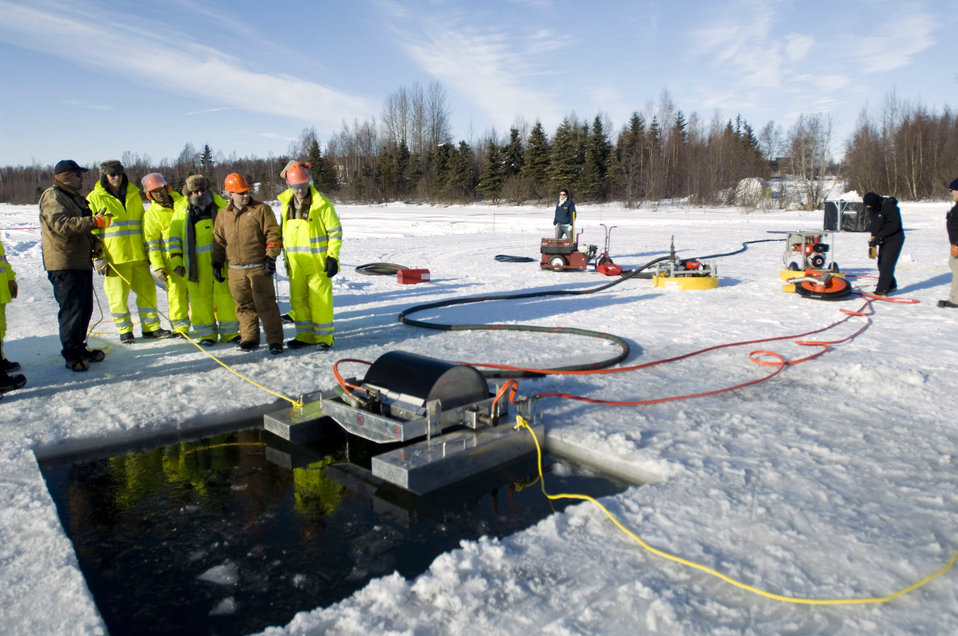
611 Civil Engineer Squadron preps for oil spill

Airmen from the 611th Civil Engineer Squadron run the drum skimmer to collect oil on Six-mile Lake on Elmendorf Air Force Base, Alaska.